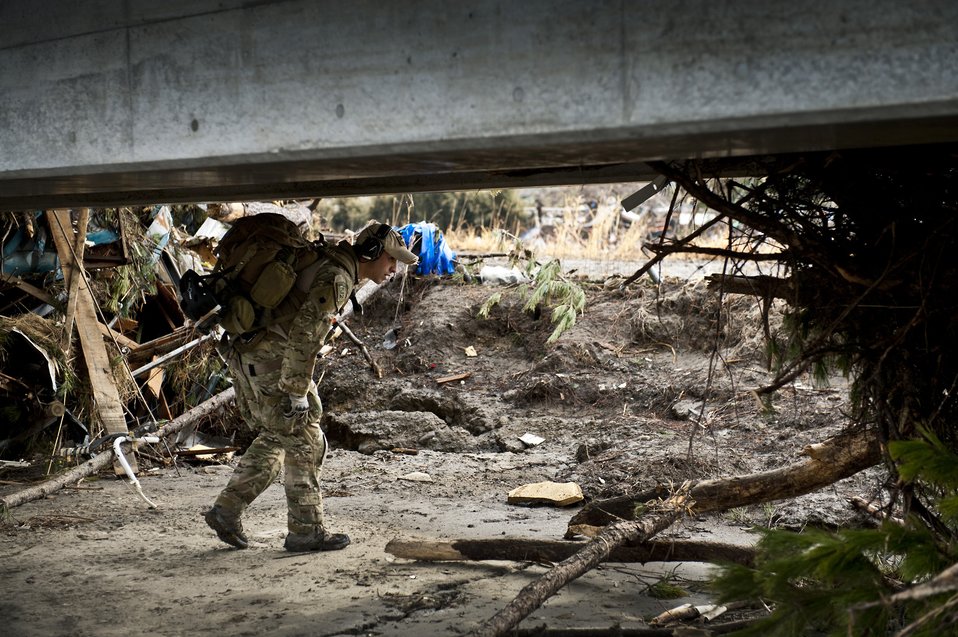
Searching for survivors

Senior Airman Steven Nizbet looks for trapped survivors March 16, 2011, at Sendai Airport, Japan. Airman Nizbet is a pararescueman from the 320th Special Tactics Squadron at Kadena Air Base, Japan.